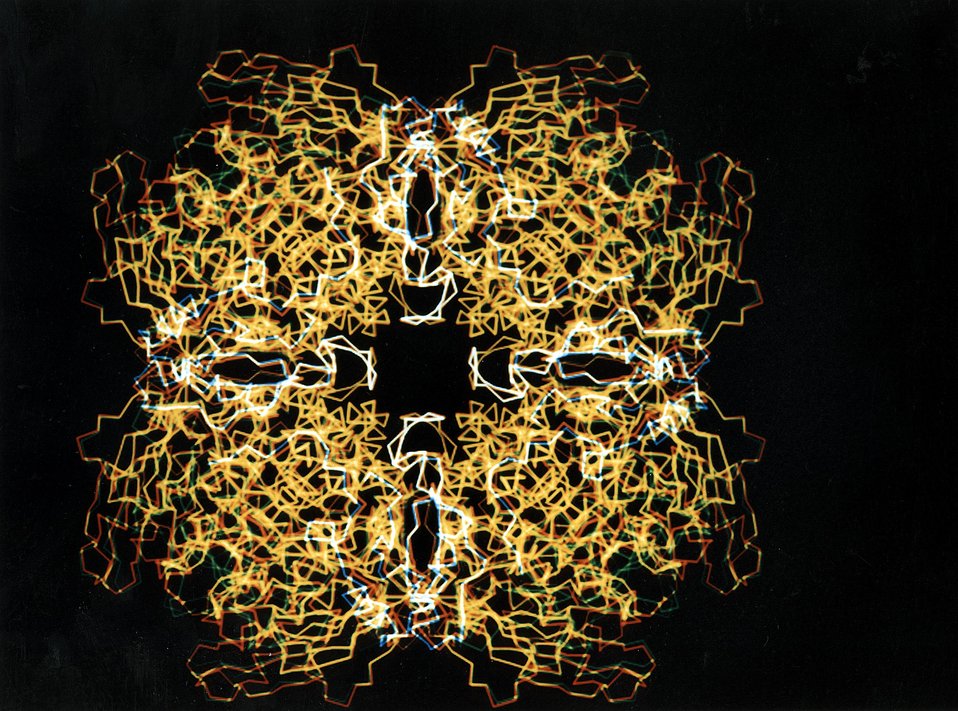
Nature's Most Abundant Enzyme. Another essential element of the photsynthetic process is the conversion of stored energy and CO2 into usable sugars and starches. In this image, the conformation of the active form of the enzyme (green) is superimposed on that of an inactive form (red). Regions that are identical in the two forms appear in yellow.